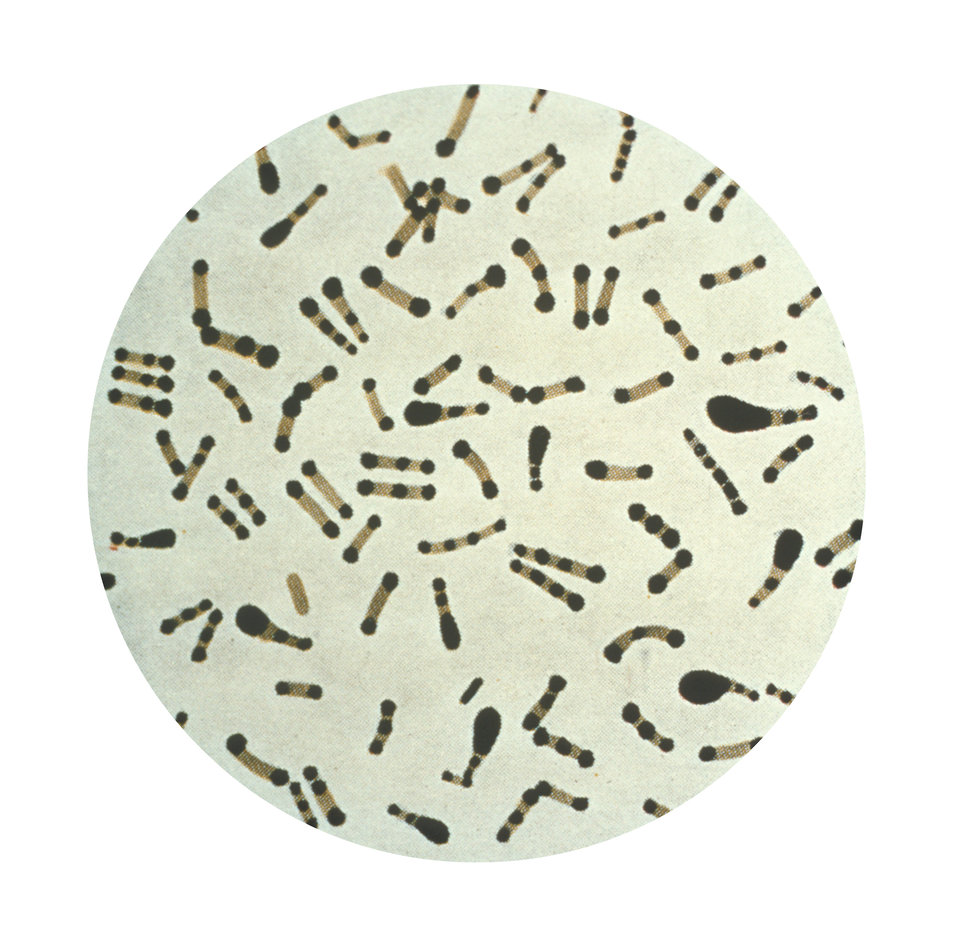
A photomicrograph of Corynebacterium diphtheriae taken from an 18 hour culture, and using Albert's stain.